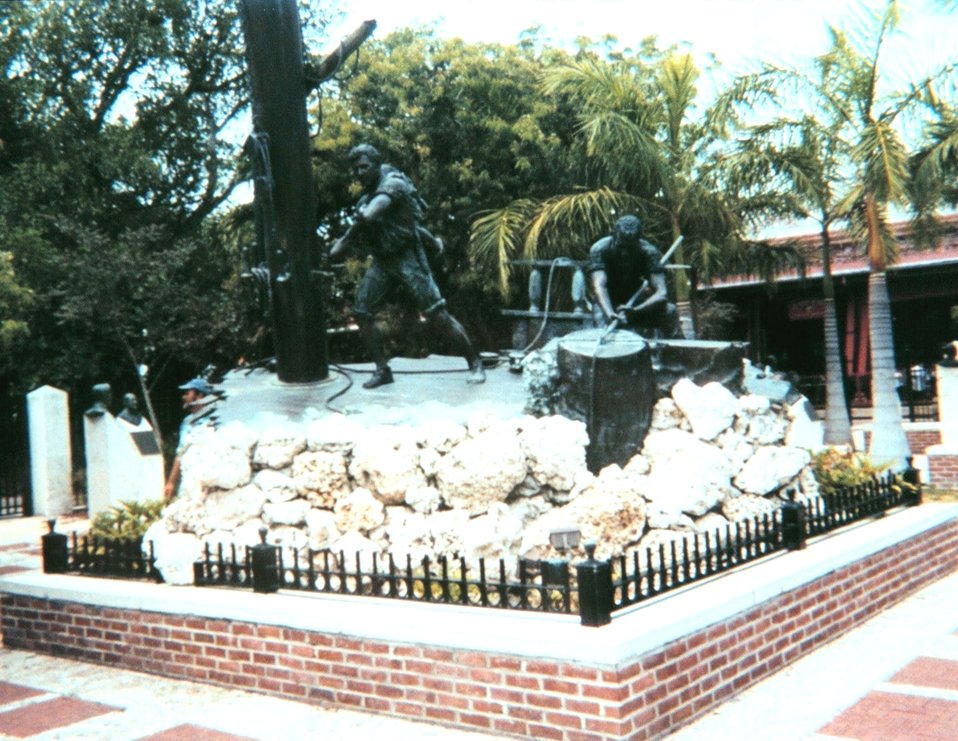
The 'Wrecker Memorial' at Key West. Wreckers flocked to the scene of shipwrecks hoping to salvage the cargoes for their own enrichment. However, their first legal priority was to save lives.